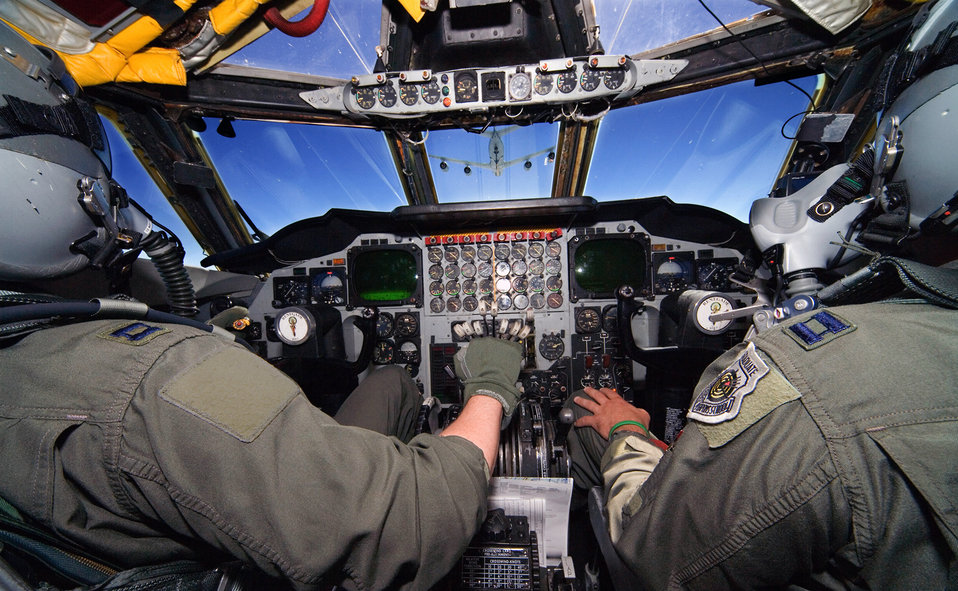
Easy on the approach

A B-52 Stratofortress crew prepares to take fuel April 16 from a KC-135 Stratotanker during a training mission. The B-52 from Barksdale Air Force Base, La., is one of eight long-range, subsonic, strategic bombers belonging to the 917th Wing.